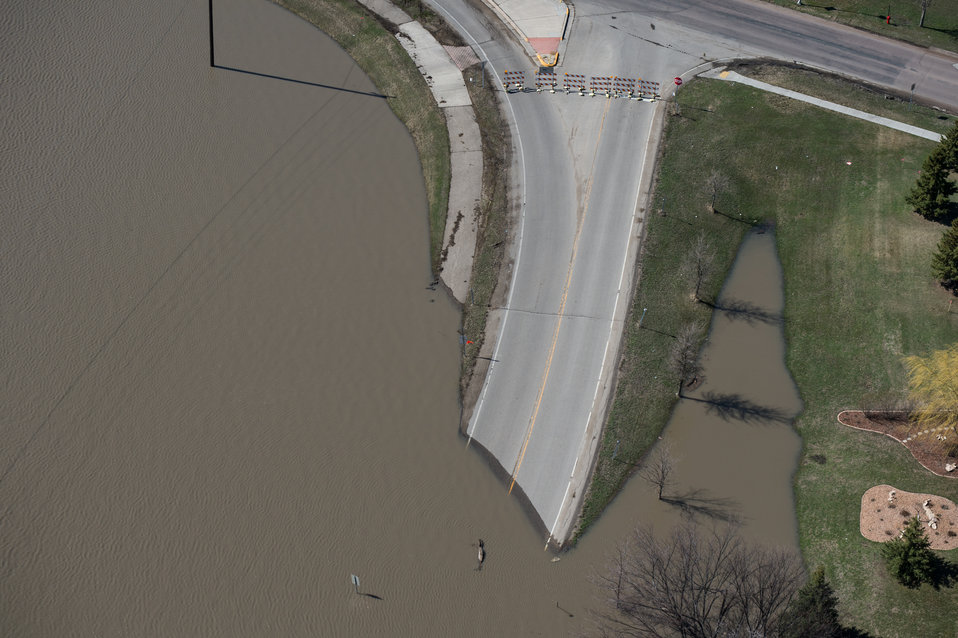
Near the intersection with 37th Ave. N., North Broadway curves into flood waters from the Red River, in Fargo, North Dakota, on Tuesday, April 30, 2013.